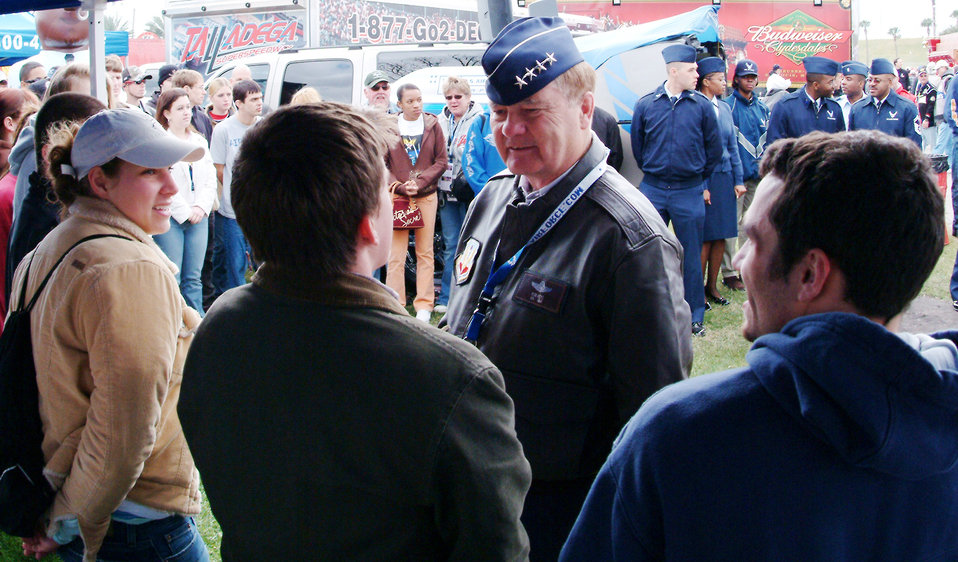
General swears in new Airmen at Daytona 500 race

Gen. Ronald Keys, Air Combat Command commander, talks with Matt Dalton, a newly sworn-in Airman, before the Daytona 500 race Feb. 18 as other new Airmen observe. General Keys gave the oath of enlistment to 36 delayed-entry-program recruits from the local area. Afterward, the new Airmen and the general were treated to a tour of the garage and pit areas before the race. The Air Force is one of the sponsors of the No. 21 Wood Brothers car driven by Ken Schrader.